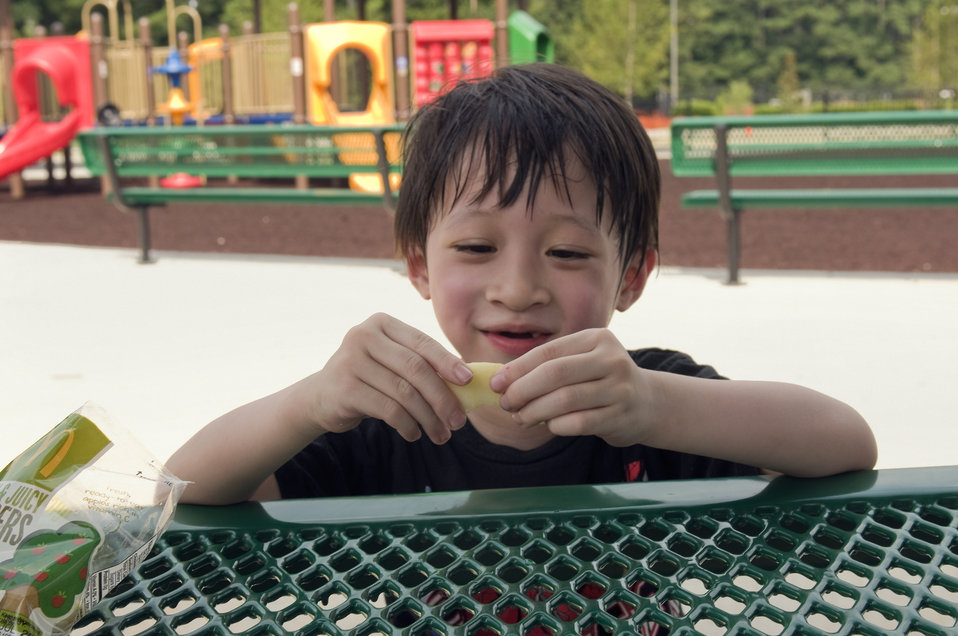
A boy eating a fruit snack

The young boy pictured here, had taken a short break from his fun-filled day out with his mother at a neighborhood playground. Here he was, about to have a snack, consisting of a healthy piece of fruit.